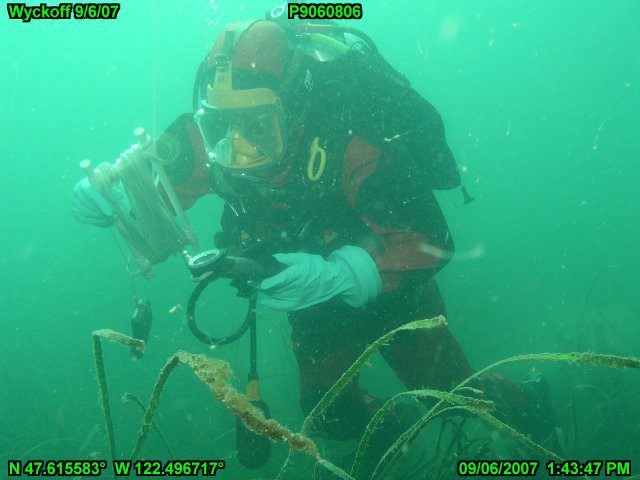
Mapping eel grass beds in Eagle Harbor

September 6, 2007. An EPA diver maps eel grass beds in Eagle Harbor as part of a habitat assessment at the Wyckoff-Eagle Harbor Superfund site near Bainbridge Island. Eel grass provides essential habitat for fish and shellfish species in Puget Sound.

Learn more about the Puget Sound Ecosystem